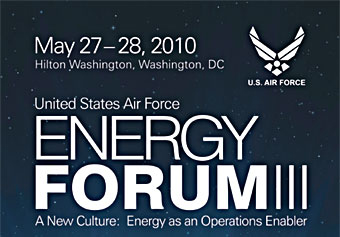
Registration open for 2010 Air Force Energy Forum III

The 2010 Air Force Energy Forum III will focus on the service's most pressing energy issues and is scheduled for May 27 through 28 in Washington, D.C.